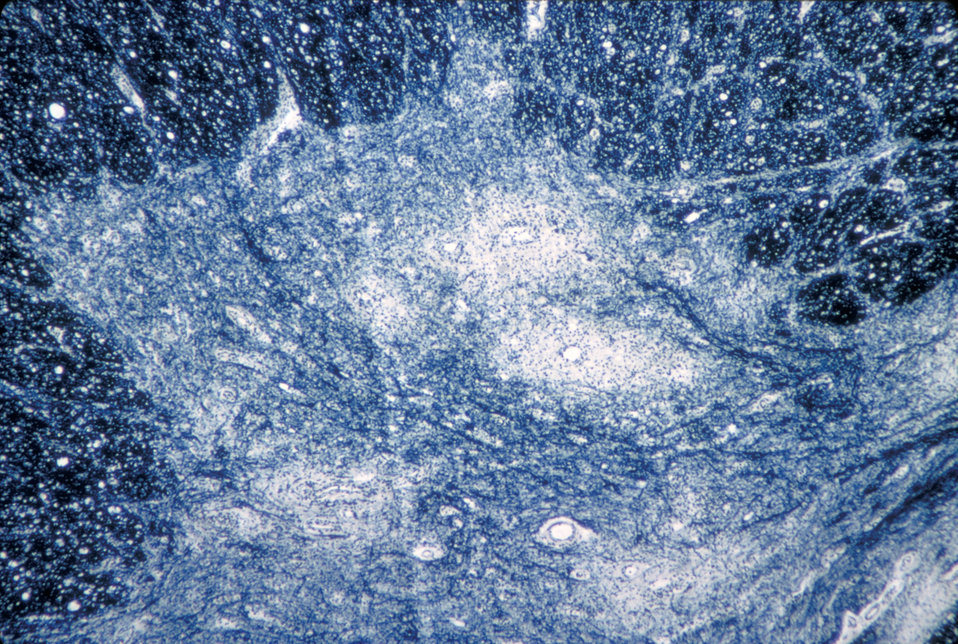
A photomicrograph of the cervical spinal cord in the region of the anterior horn revealing Polio Type III degenerative changes.